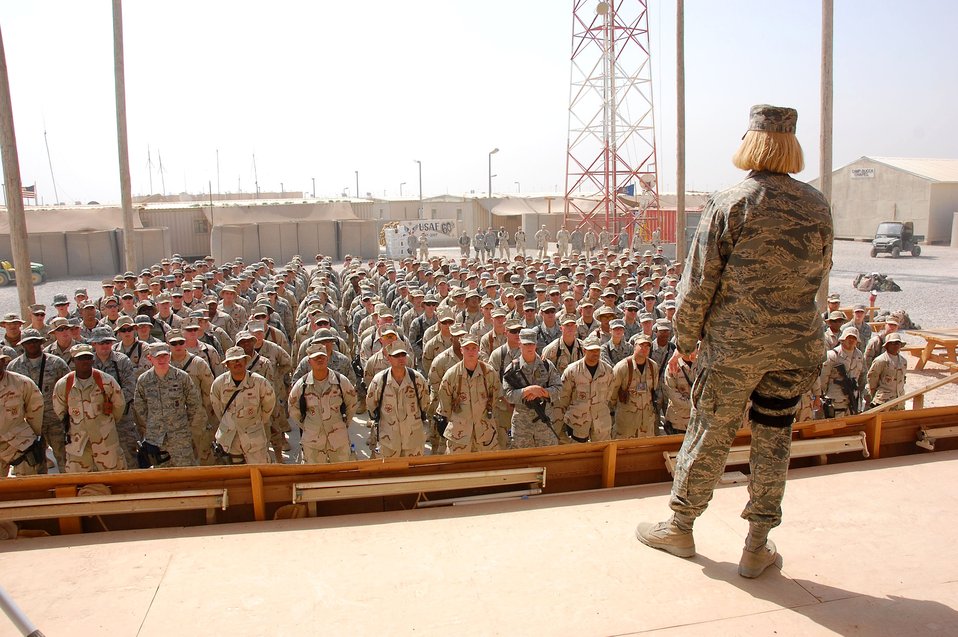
Top Cop visits deployed Airmen

Brig. Gen. Mary Kay Hertog visits with deployed Airmen to discussed deployment tempos, training and the future of the career field Oct. 10 at Camp Bucca, Iraq. General Hertog is the Air Force Security Forces director.